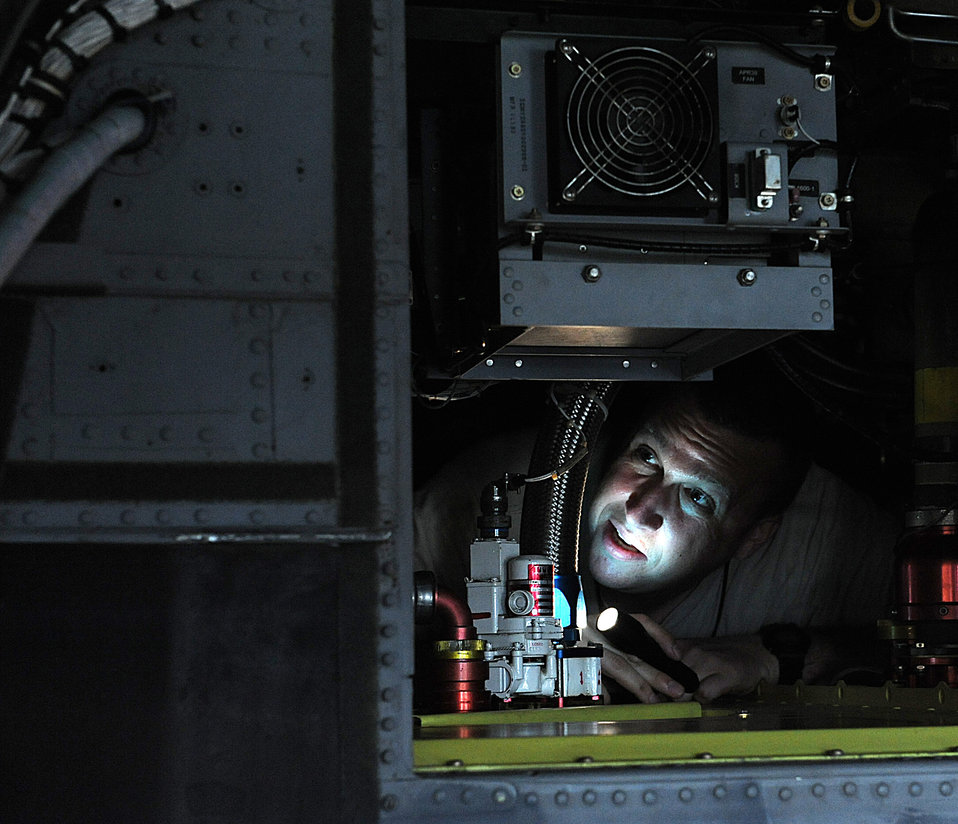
Wired

U.S. Air Force Staff Sgt. Cayce Wiesmore repairs chaffed wires from corrosion build up on an HH-60G Pave Hawk Nov. 2, 2011, at Kadena Air Base, Japan. Francisco is a 718th Aircraft Maintenance Squadron integrated flight control systems craftsman.